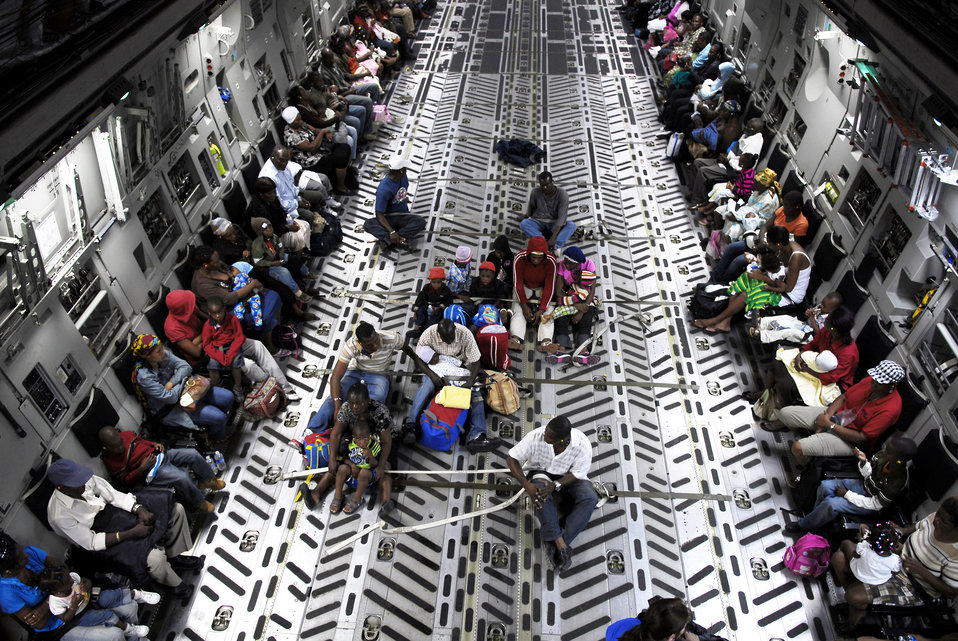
AMC provides airlift for Americans in Haiti

U.S. citizens, mostly women, children and elderly, are evacuated aboard a C-17 Globemaster III bound for Orlando, Fla., Jan. 19, 2010. Nearly 100 citizens were transported to Orlando International Airport where they were met by members of the Department of Homeland Security and U.S. Customs and Border Protection who provided them with blankets for the cooler night in Orlando.